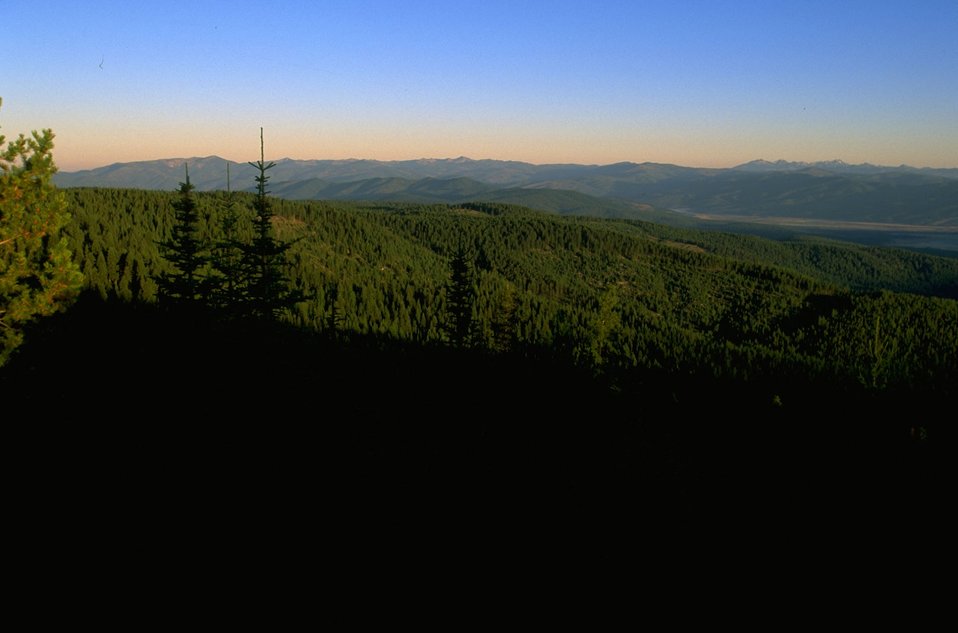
Garnet Mountains with the Blackfoot River Valley in foreground